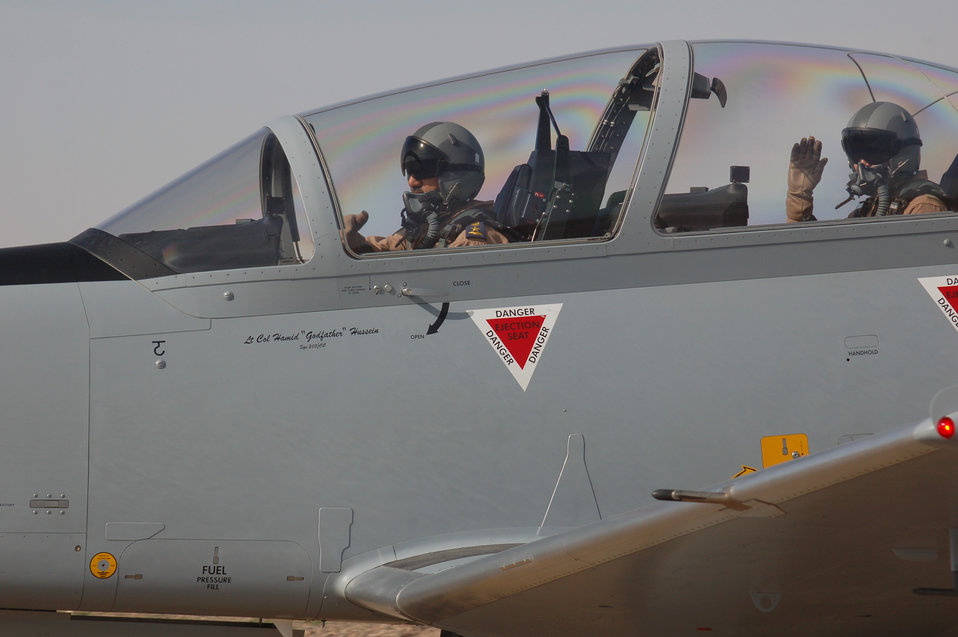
Iraqi air force Lt. Col. Hamid

Iraqi air force Lt. Col. Hussein Hamid (left) prepares for takeoff on his first instructor flight with a student pilot March 19, 2011, in Tikrit, Iraq. Colonel Hamid is the first Iraqi air force instructor pilot to be certified in the post-Saddam era. His status as an instructor pilot is a major milestone for the Iraqi air force in developing as a credible, self-sustaining air power in the region. Colonel Hamid is the Iraqi air force Squadron 203 commander.